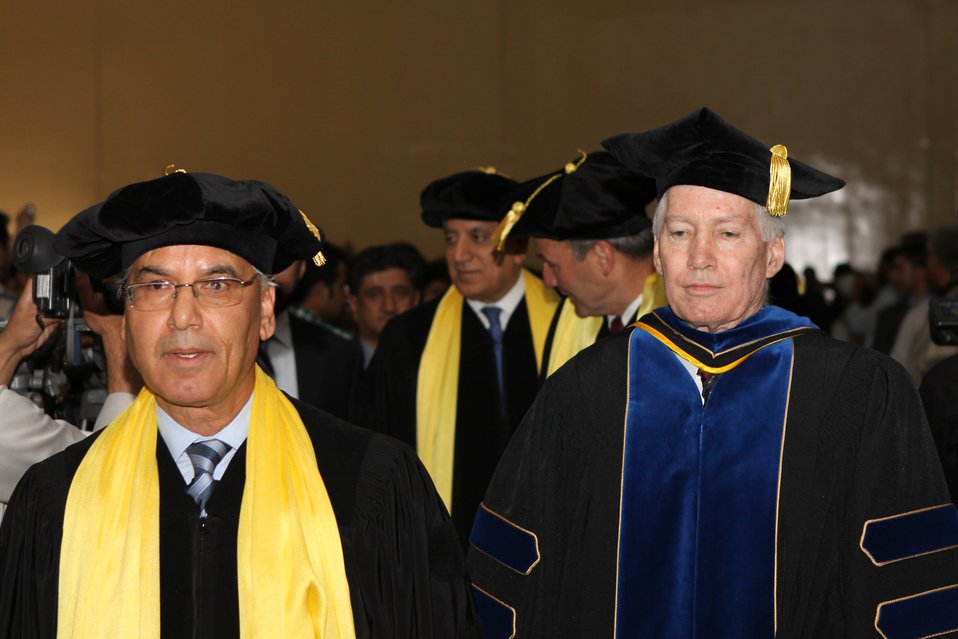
100526 AUAF Graduation 105